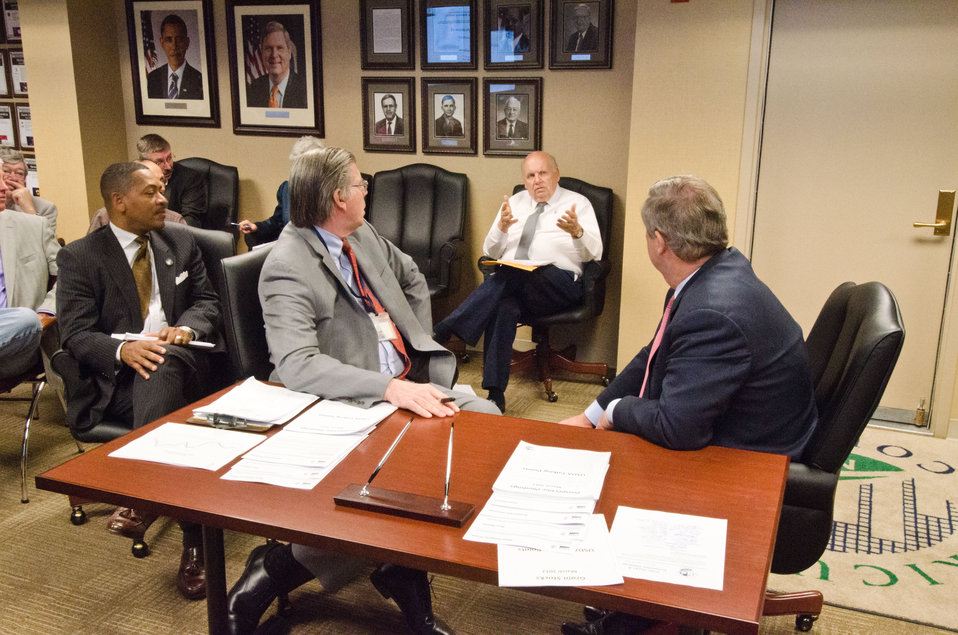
Gerald Bange (center), Director, World Agricultural Board answers a question for Dr. Joseph Glauber (left), Chief Economist for the U.S. Department of Agriculture and Agriculture Secretary Tom Vilsack during the United States Department of Agriculture’s, National Agricultural Statistics Service, March Agricultural Survey. Secretary Vilsack signed the survey releasing the information at the USDA, NASS Lockup in Washington, D.C., on Friday, March 30, 2012. The NASS lockup is agricultural commodity information held until the Secretary of Agriculture or the Secretary’s Designee has signed and released the information. The signing is the official act of recognizing the information as an official USDA document.